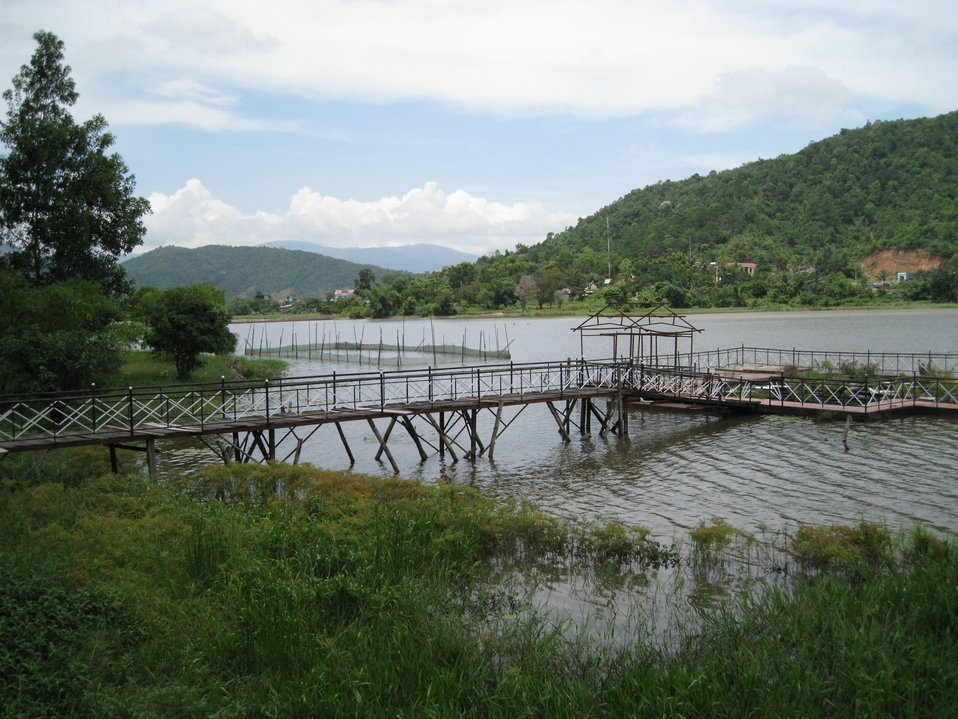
USAID supports cocoa farming communities in Central Vietnam